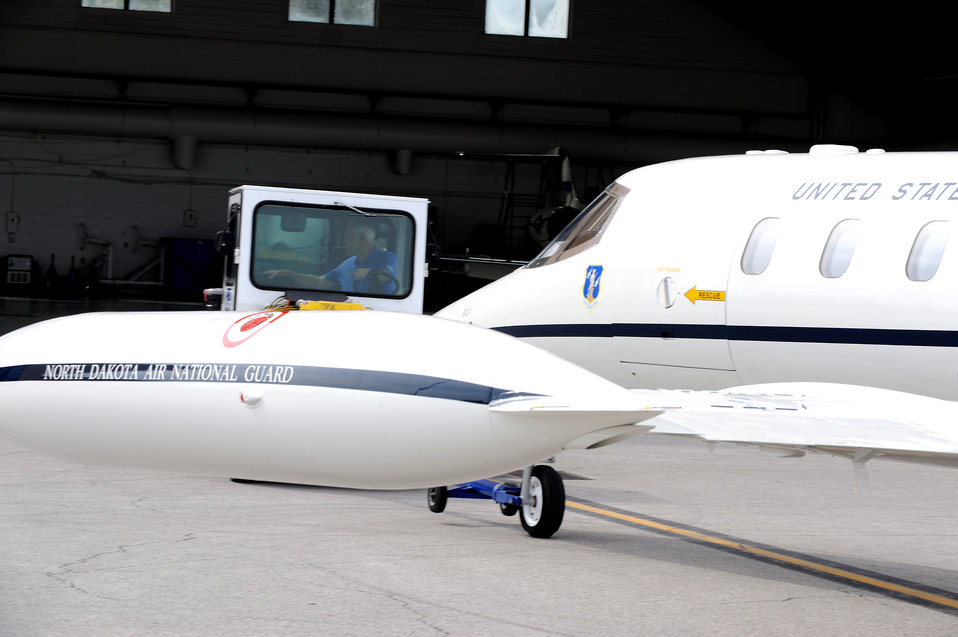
C-21 phase inspection

Dan Arens tows a C-21 into a hangar for a phase inspection Sept. 15, 2010, at Scott Air Force Base, Ill. The phase inspections are done on aircraft after they reach flying milestones to ensure the aircraft remain in top condition. Mr. Arens is a contractor with DynCorp International.